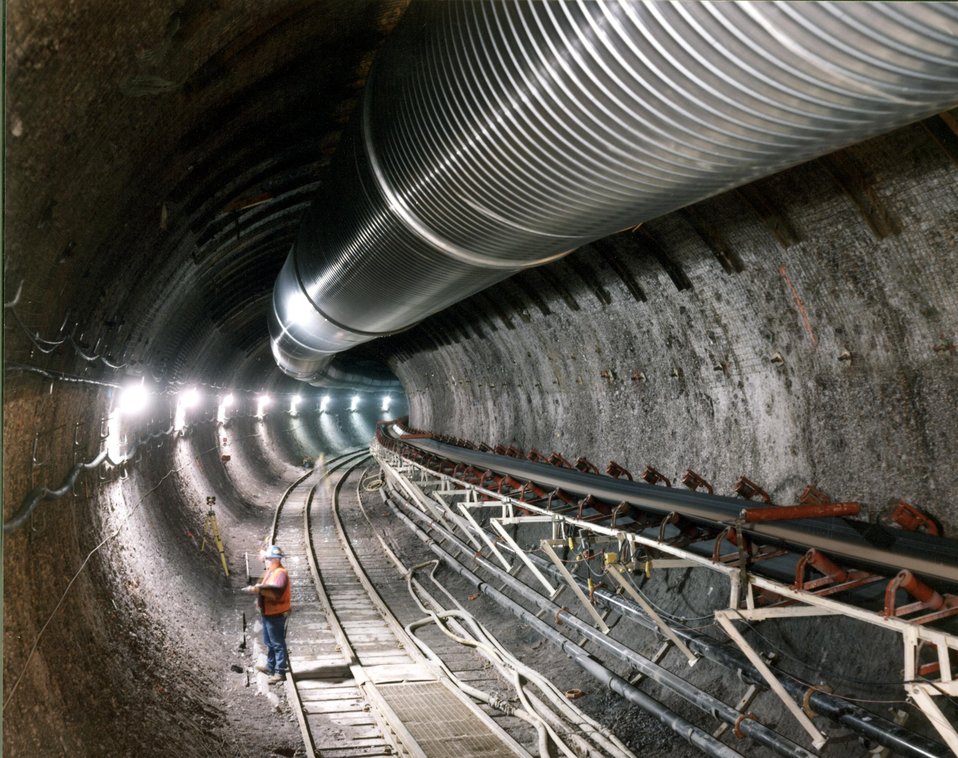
VIEW OF AN EXPLORATORY TUNNEL DUG BY THE 25-FOOT-DIAMETER TUNNEL BORING MACHINE AT YUCCA MOUNTAIN.

YUCCA MOUNTAIN IS THE SITE CONGRESS DESIGNATED FOR STUDY TO DETERMINE ITS SUITABILITY AS A GEOLOGIC REPOSITORY FOR THE NATION'S SPENT NUCLEAR FUEL AND HIGH LEVEL RADIOACTIVE WASTE. IT IS 100 MILES NORTHWEST OF LAS VEGAS IN AN ISOLATED PART OF NYE COUNTY. THE LONG NARROW RIDGE IS IN AN ARID TRANSITION ZONE BETWEEN THE LOWER MOJAVE DESERT AND THE RUGGED BASIN AND RANGE REGIONS.